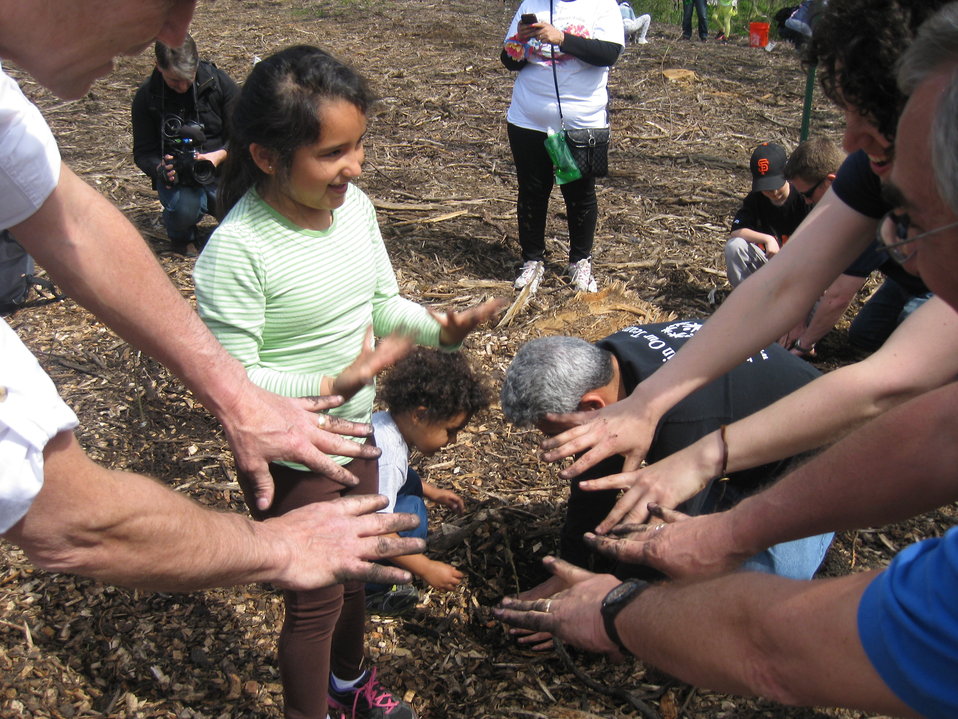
A show of dirty hands

Chicago Park District Burnham Corridor Community Planting Day
May 10, 2014
Photo by USFWS; Louise Clemency